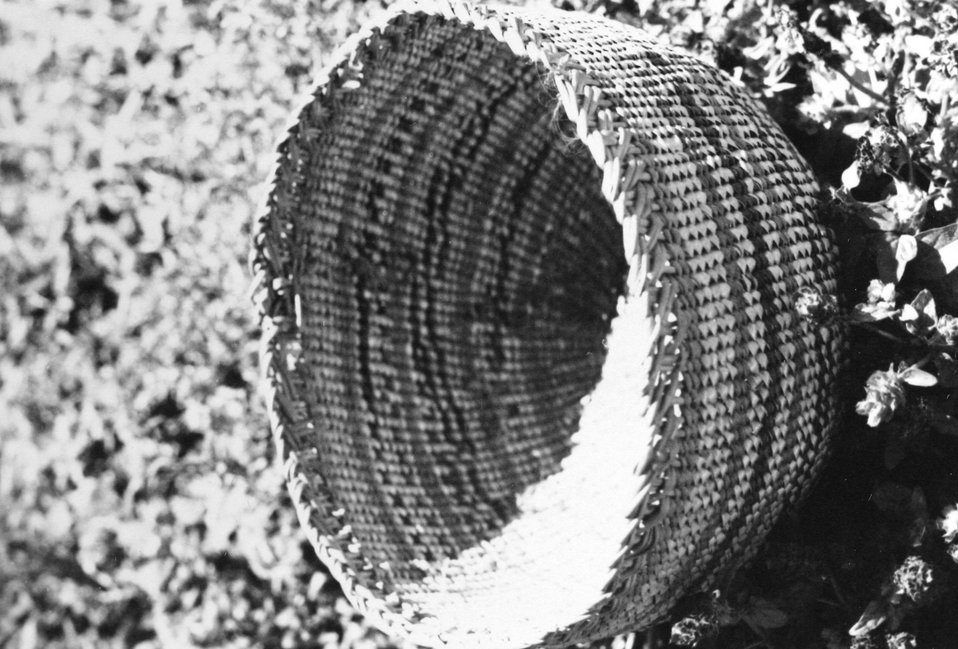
A basket made by Adeline Billings.